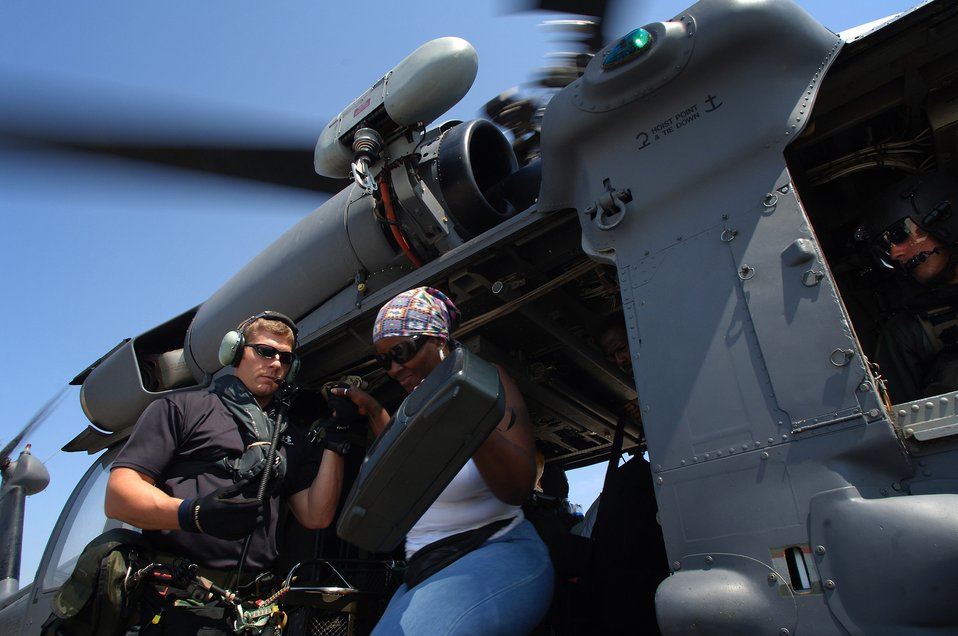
Airmen 'pave' way for help

NEW ORLEANS -- Air Force rescue crews help move evacuees from temporary collection points to the New Orleans's airport where they are processed and moved to more permanent accommodations.